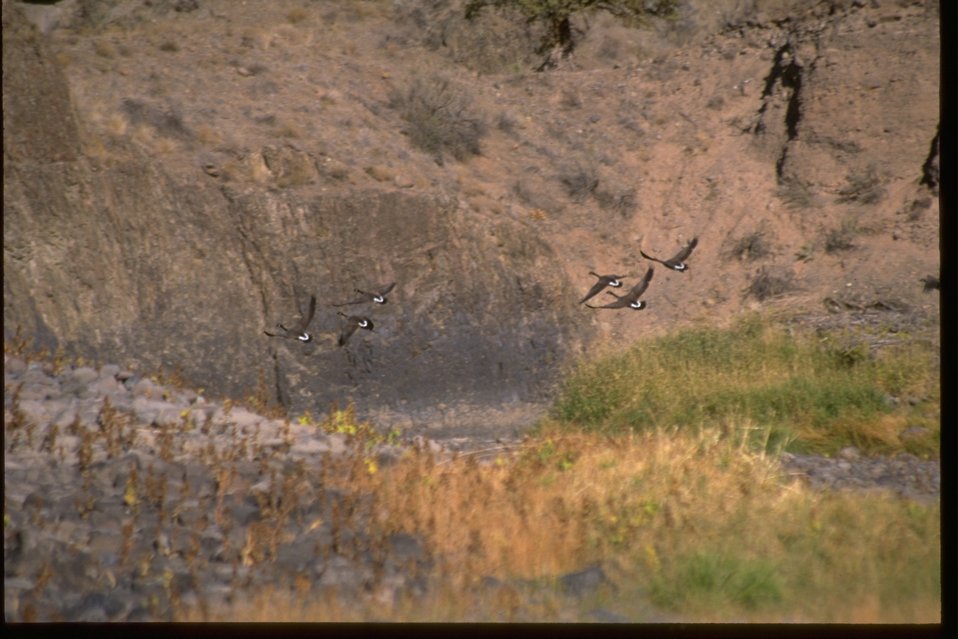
Low flying geese flying over the John Day River.